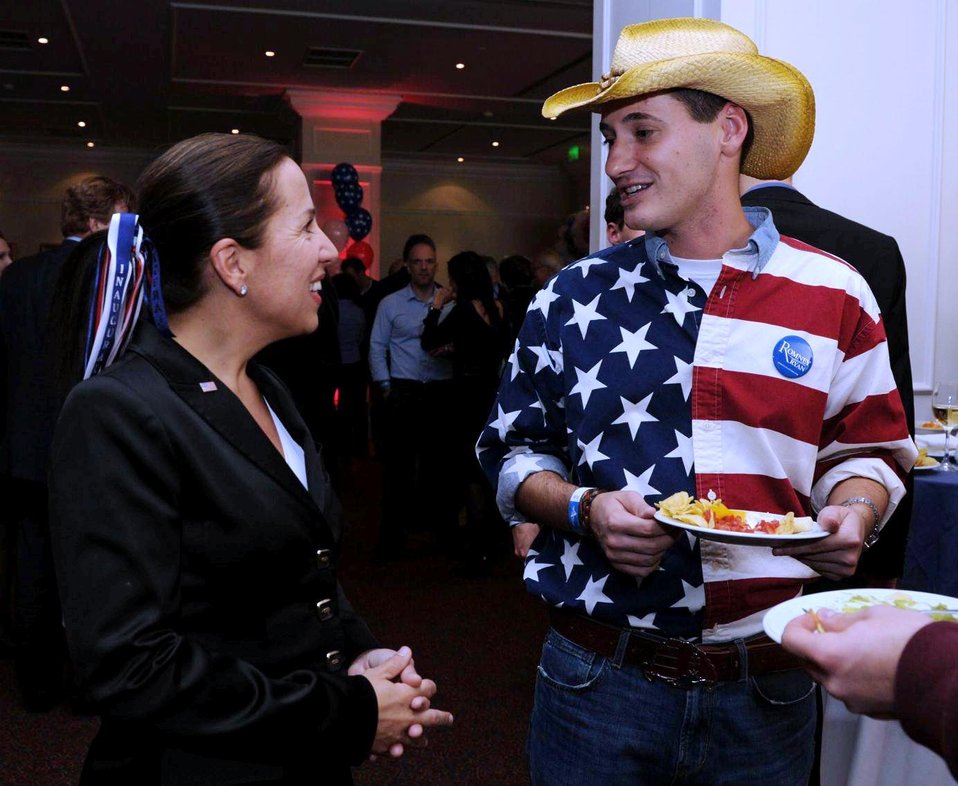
People Speak at Embassy Budapest's 2012 Election Night Party

People chat at the 2012 Election Night event at the U.S. Embassy in Budapest, Hungary, November 6, 2012.